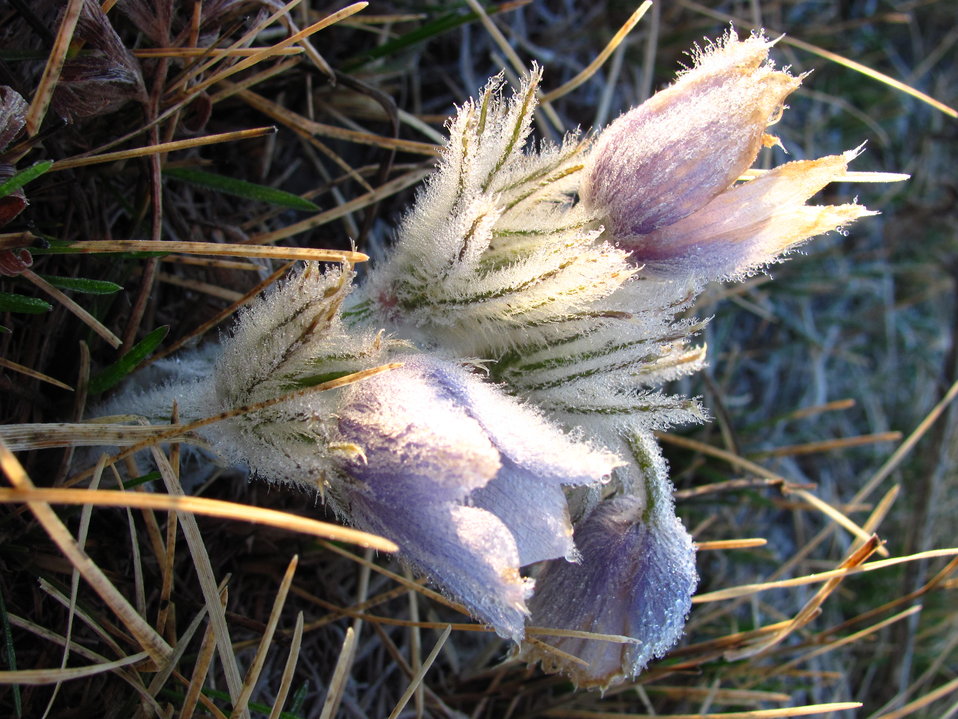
Pasque Flower

This native Pasque Flower (Anemone patens) was just warming up after a cold frosty night at Chase Lake NWR/WMD/PP Headquarters.

Location: Woodworth, ND (2012)

Credit: Char Binstock / USFWS

Photo Contest Entry #98